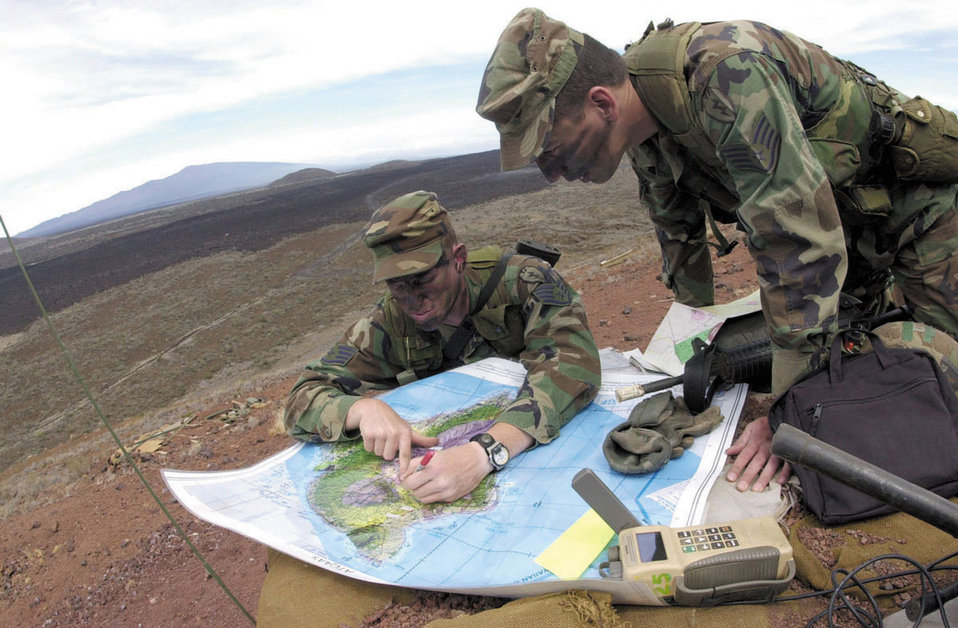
Close Air Training

POHAKULOA TRAINING AREA, Hawaii -- Staff Sgts. Vincent Delorenzo (left) and Matt Nugent use a map to coordinate targets for incoming fighter aircraft during close air support training here. The TAC/P modernization program will help troops coordinate targets for incoming fighter aircraft during close air support training at Pohakuloa Training Area, Hawaii.